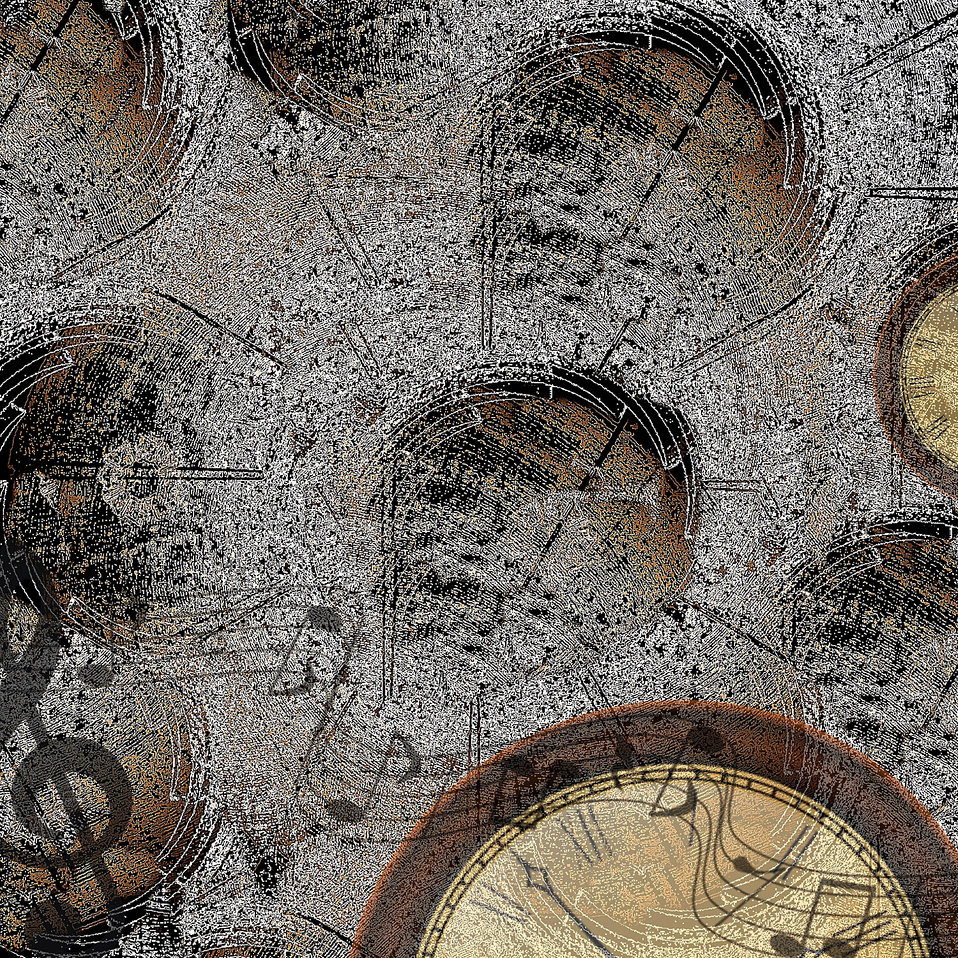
Time music

Background.